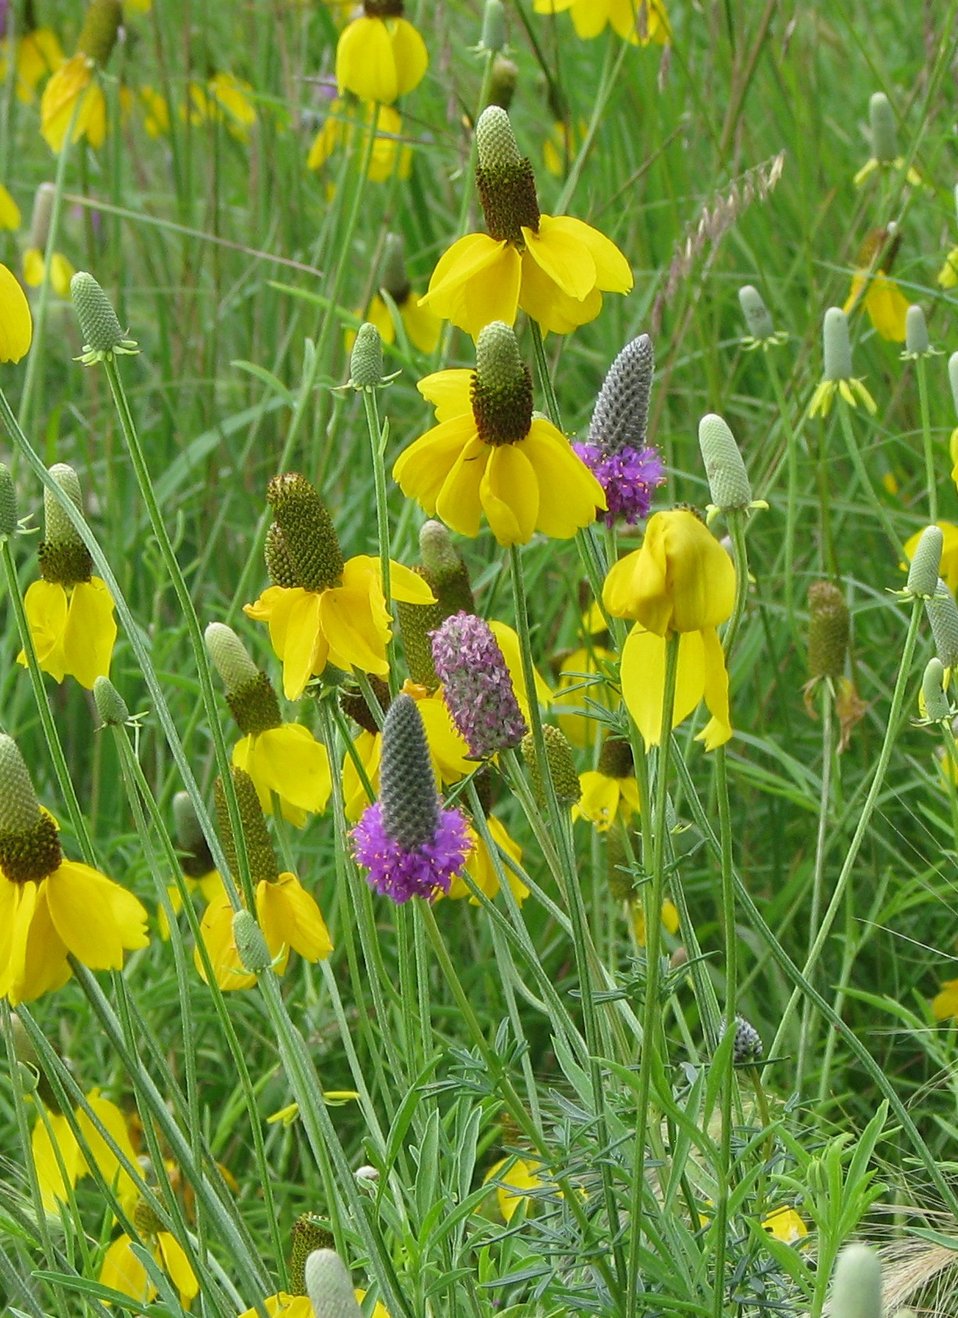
Native Wildflowers

Yellow cone flower and purple prairie clover bloom near the office at Madison Wetland Management District located near Madison, SD.

Credit: Jennifer Briggs / USFWS

Photo Contest Entry #112